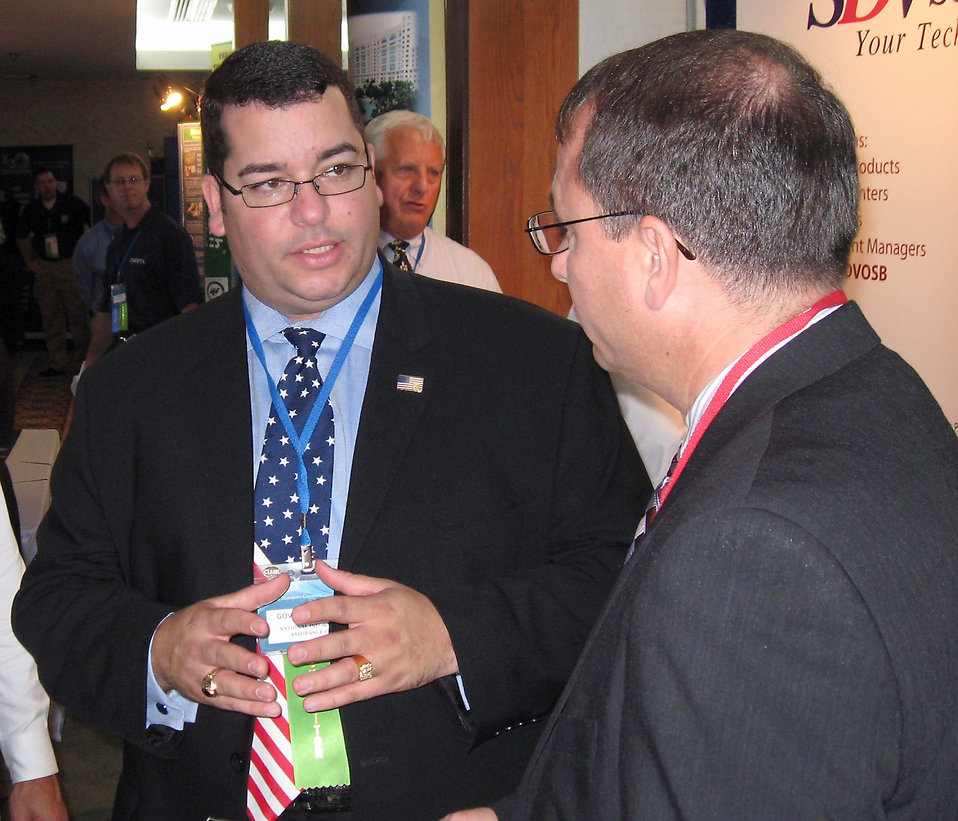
Service-disabled veteran-owned small businesses take Air Force

Ronald A. Poussard (right) speaks with Giovanni Suarez at the 2008 Service-Disabled Veteran-Owned Small Business Technology Conference and Expo Nov. 14 at MacDill Air Force Base, Fla. Mr. Poussard is the director of the Secretary of the Air Force Small Business Programs. Mr. Suarez is president and CEO of National Information Assurance Corporation.